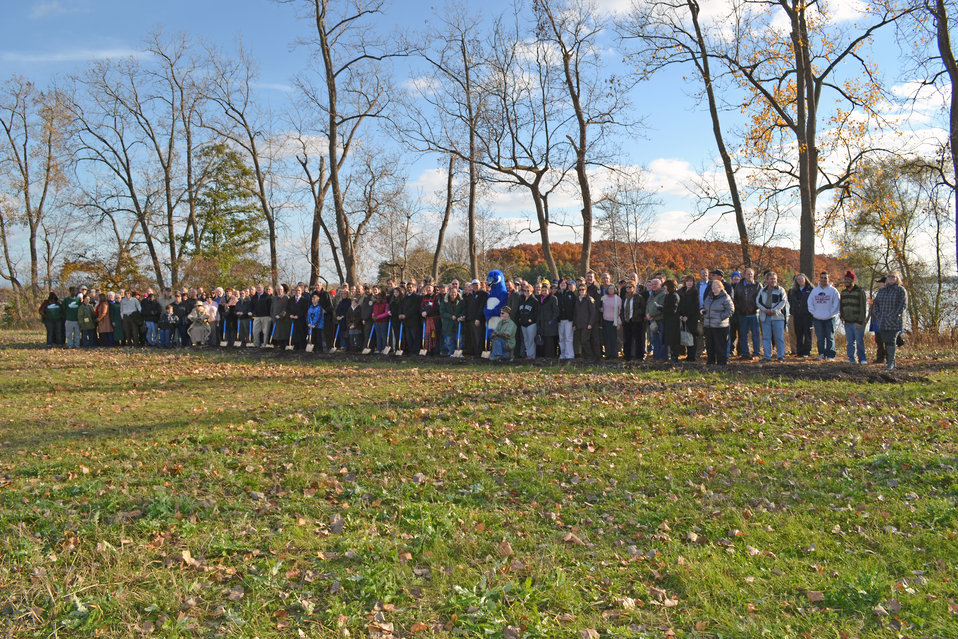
Everybody Celebrated

Detroit River International Wildlife Refuge groundbreaking celebration.